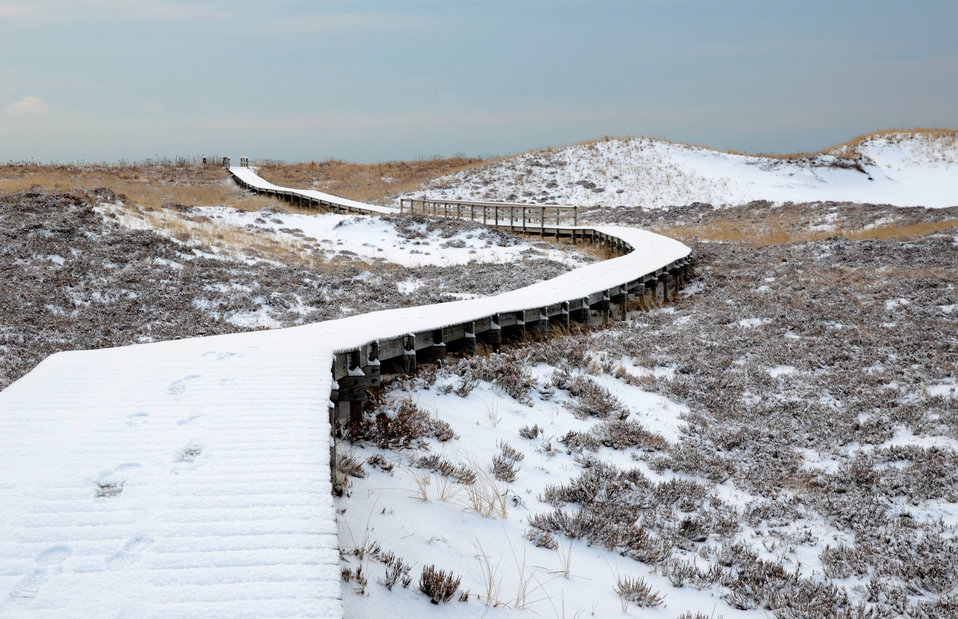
Winter boardwalk

Parker River National Wildlife Refuge, MA.